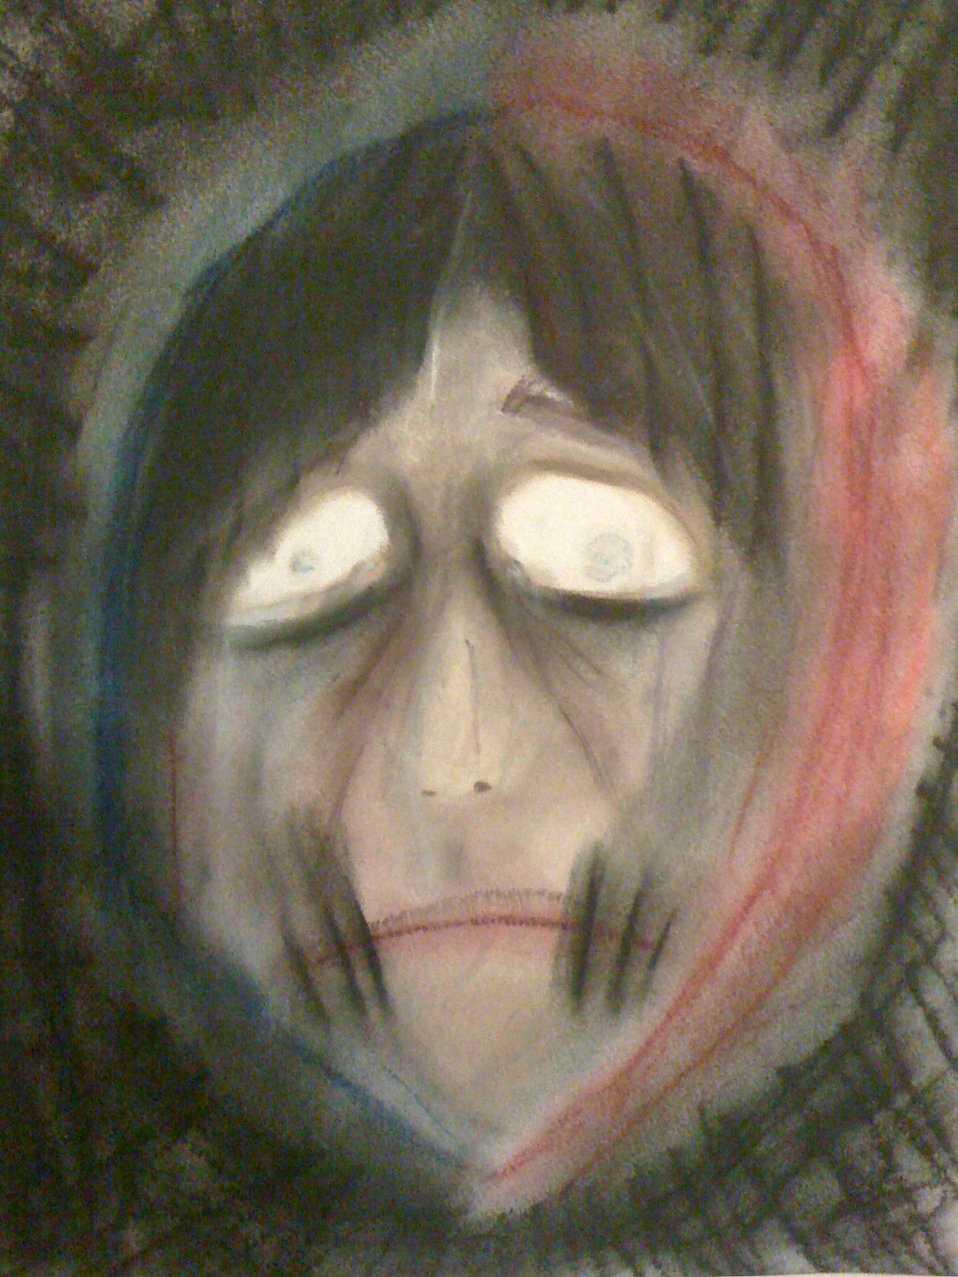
Solitary Duality of the Soul. found on the martyr train in Atlanta Ga